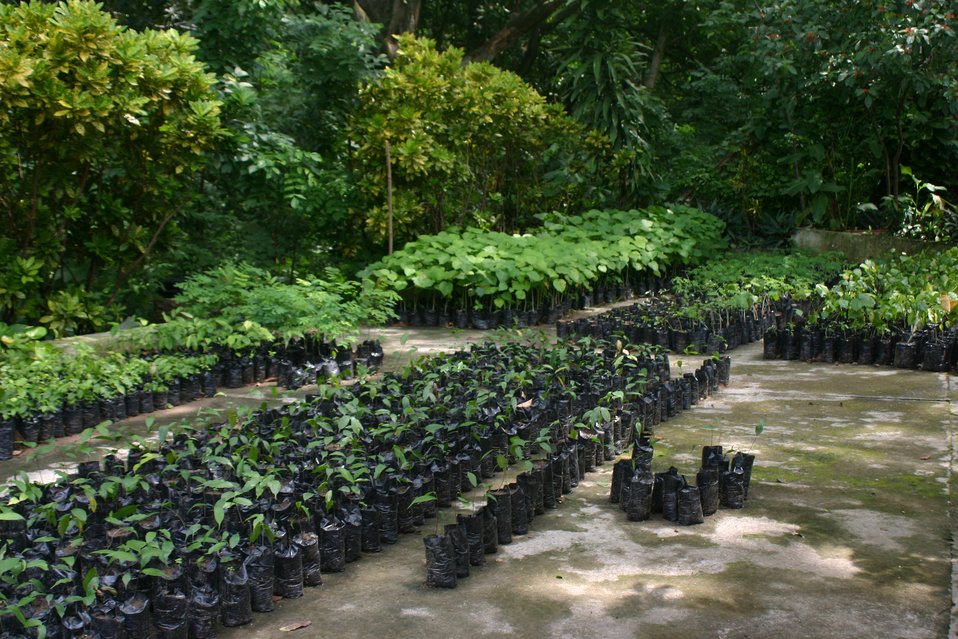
Nursery to support reforestation in Colombia. Supported by the Neotropical Migratory Bird Conservation Act.